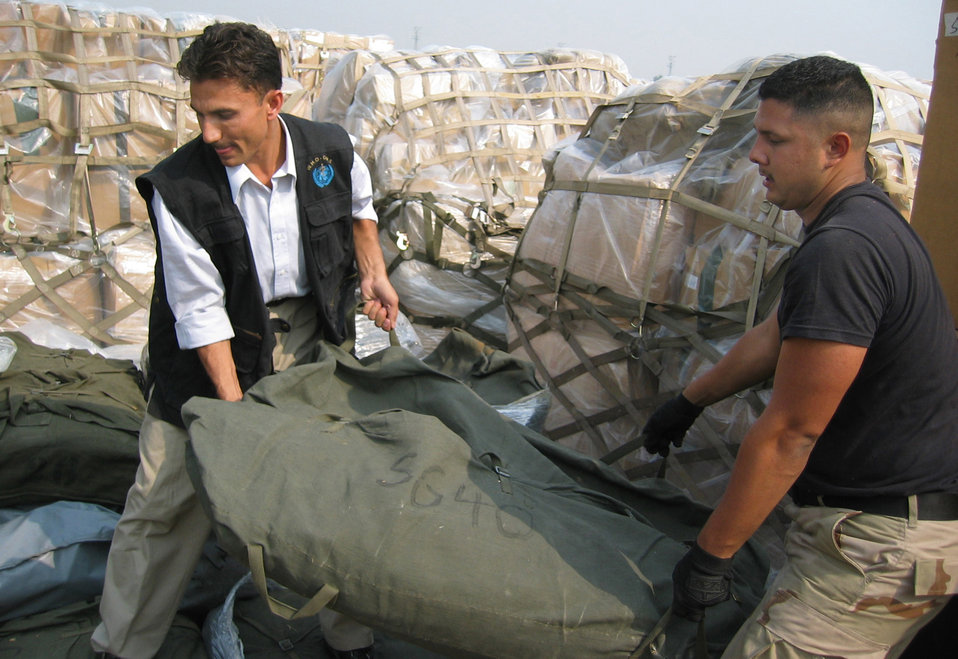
Humanitarian efforts

ISLAMABAD, Pakistan (AFPN) -- Airman 1st Class Joseph Solis helps a United Nations worker load tents. Airman Solis is an air transportation specialist with the 818th Contingency Response Group/24th Air Expeditionary Group.